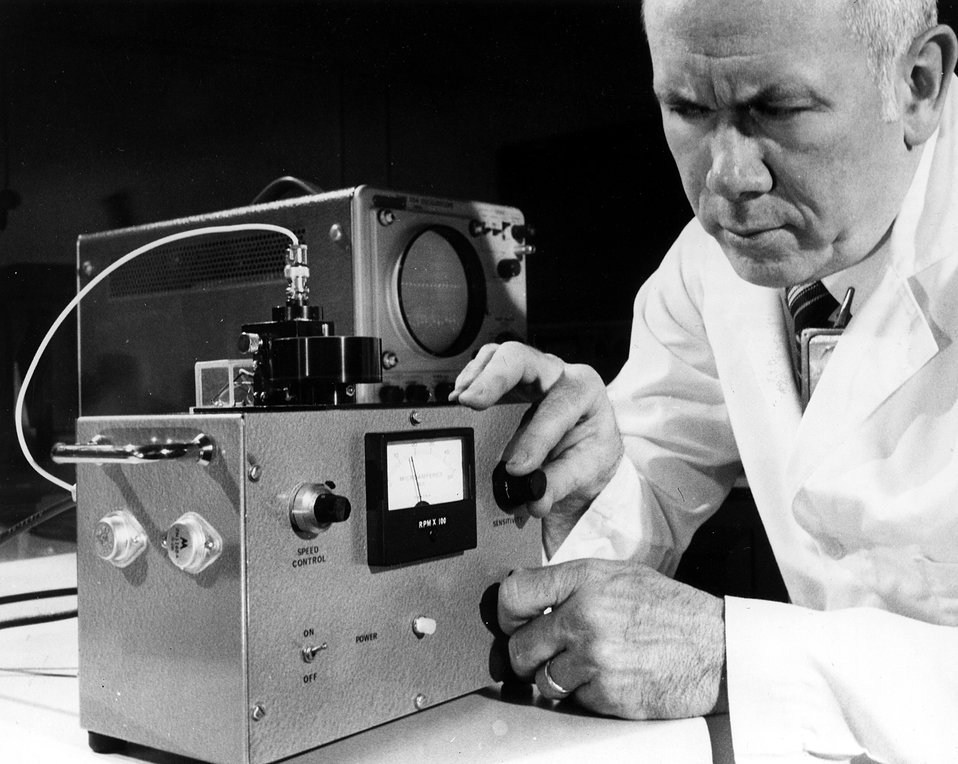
High-speed clinical analysis of body fluids is now possible using a centrifugal system called the GeMSAEC developed at the AEC's oak Ridge National Laboratory (ORNL), Oak Ridge, Tenn. c. 1972